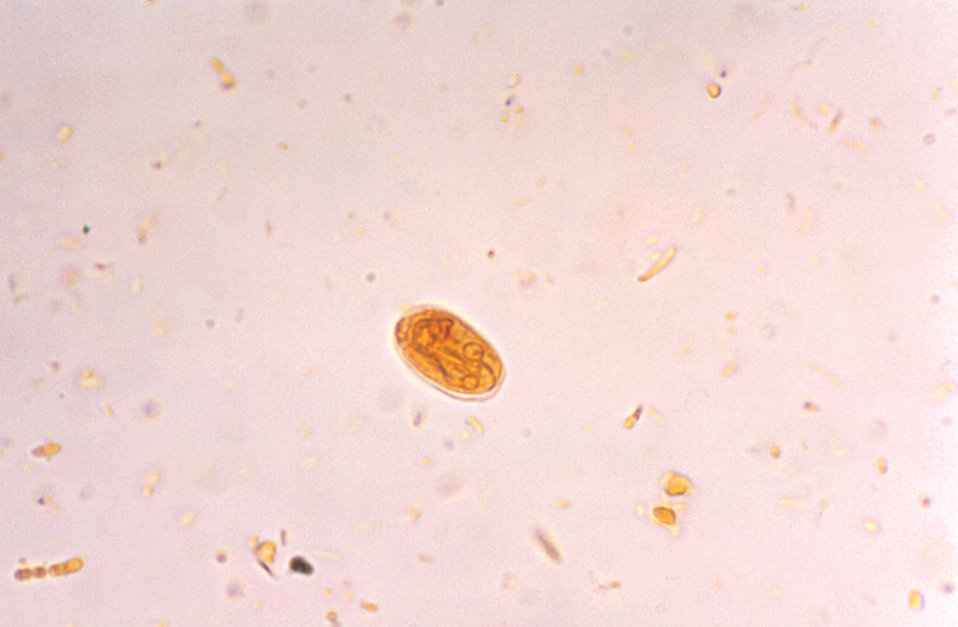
Photomicrograph of a Giardia lamblia cyst visualized using an Iodine stain.